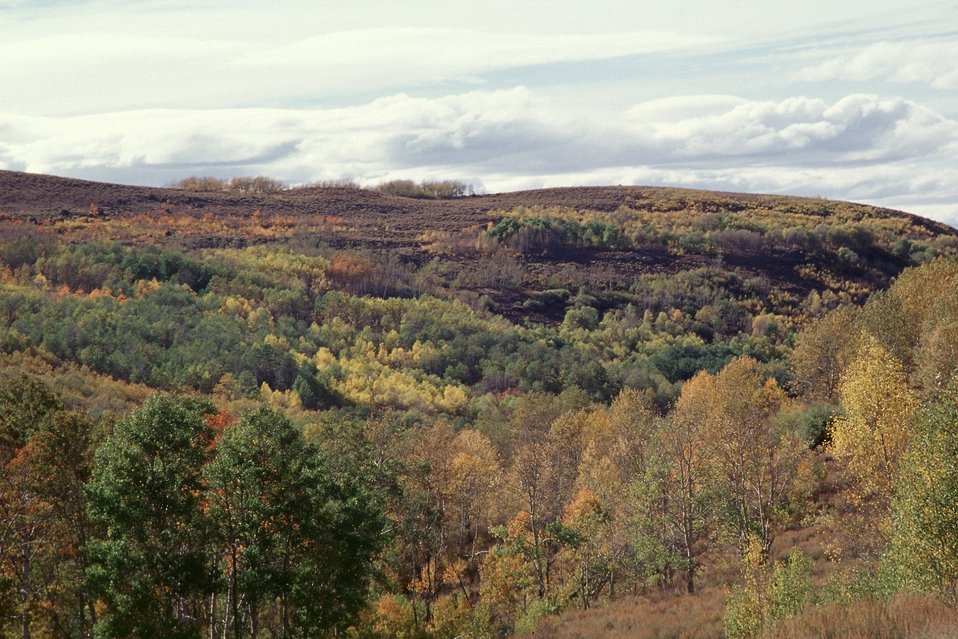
Aspens at Fish Creek, Steen's Mountain.